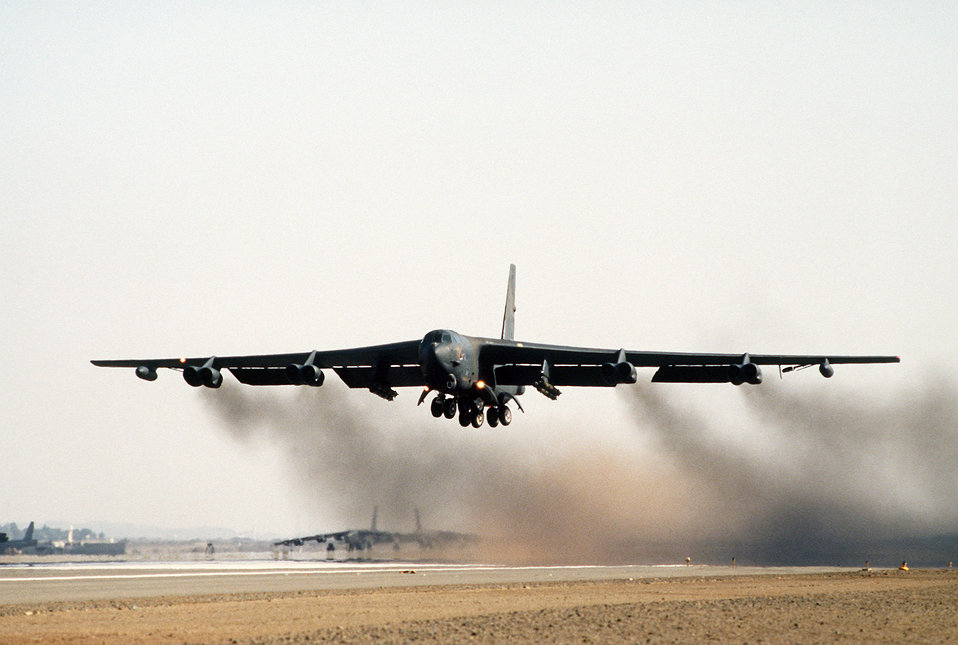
B-52G Stratofortress

1990's -- A B-52G Stratofortress bomber aircraft of the 1708th Bomb Wing takes off on a mission during Operation Desert Storm.